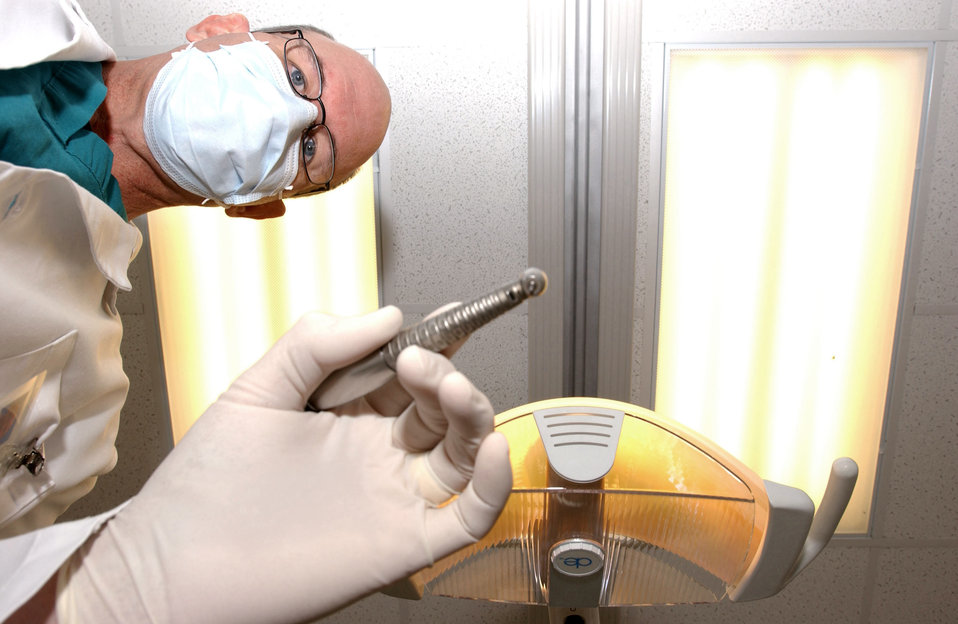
Open wide

WHITEMAN AIR FORCE BASE, Mo. -- Maj. Trent Payne cleans a patient's teeth here recently. Major Payne is assigned to the 509th Medical Group.